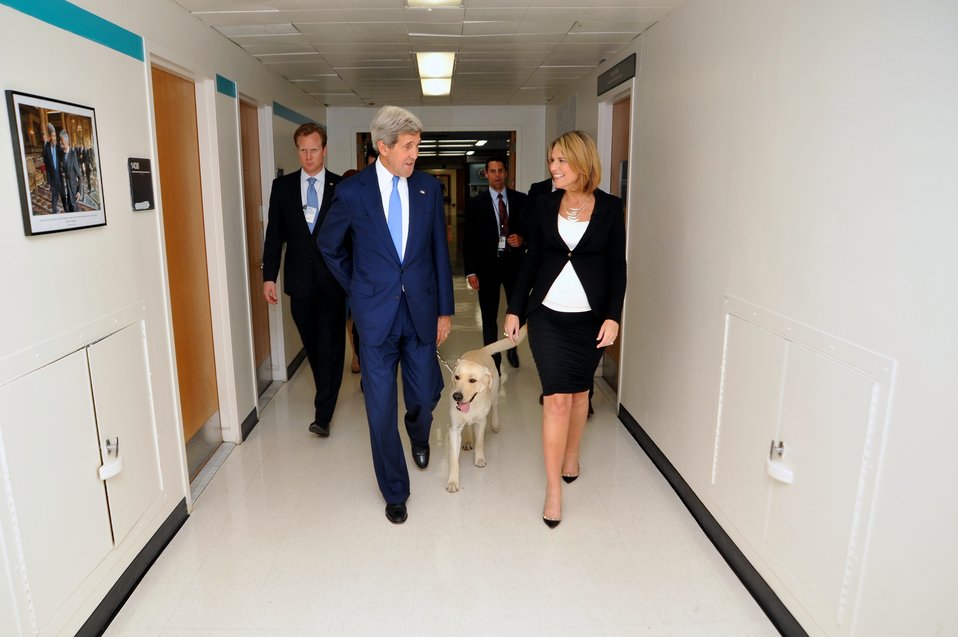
Secretary Kerry Walks Through State Department With 'Today's' Guthrie

U.S. Secretary of State John Kerry, NBC News 'Today' show co-anchor Savannah Guthrie, and the Secretary's Labrador Retriever Ben walk through the halls of the State Department during a break between interview segments on June 18, 2014.